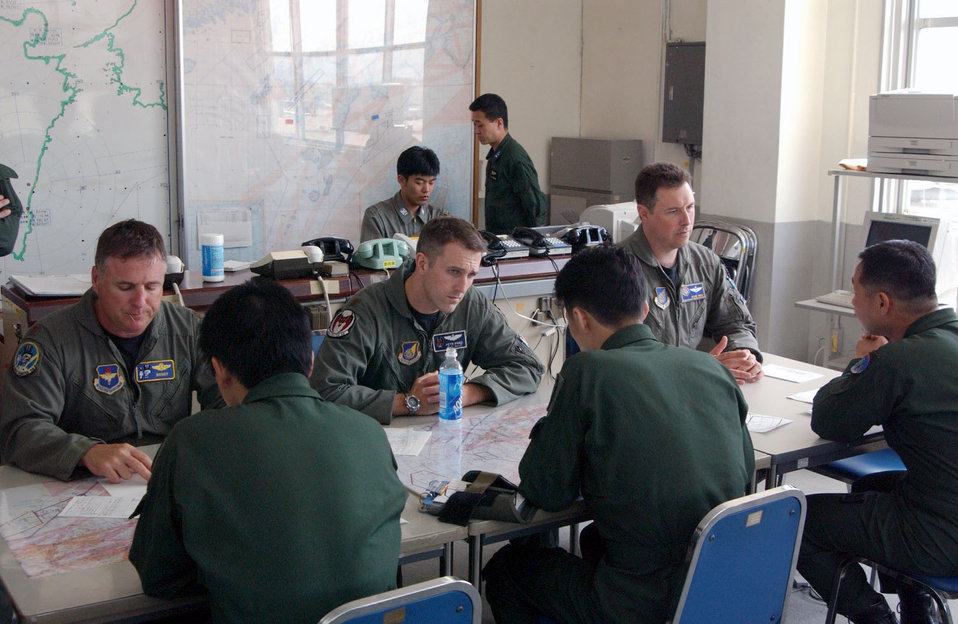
Table training tactics

NYUTABARU AIR BASE, Japan -- Instructor pilots from 5th Air Force discuss training tactics and procedures with Japan Air Self-Defense Force F-15 pilots as they prepare to conduct their first air-to-air refueling missions. This air-refueling skill improves current JASDF capabilities.